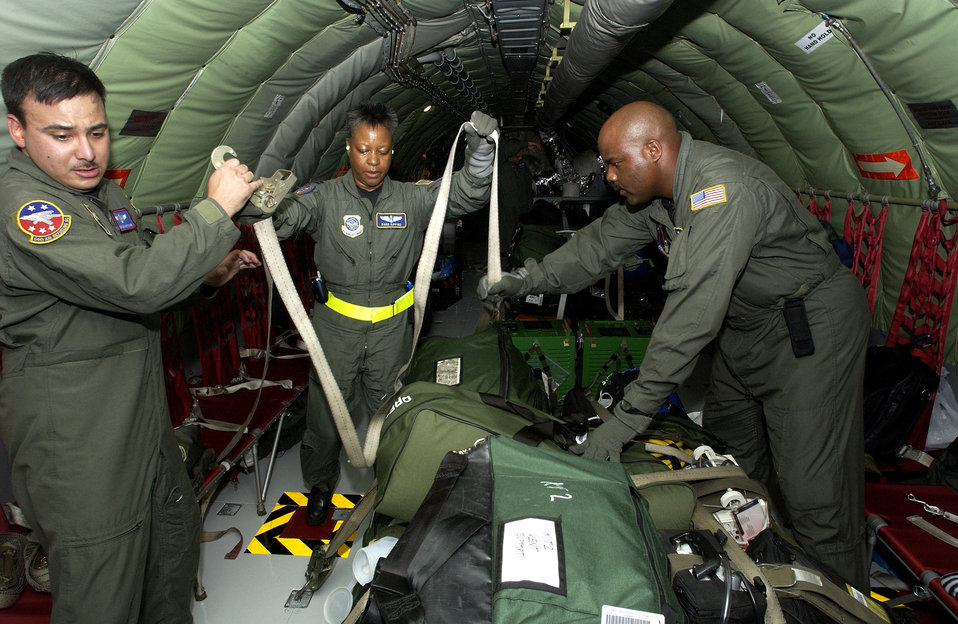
Cargo tie-down

SCOTT AIR FORCE BASE, Ill. - From left to right Staff Sgt. Ralph Hoffmann helps Capt. Barbara Kippins and Tech. Sgt. Todd Hughes secure cargo on a KC-135 Stratotanker before departing to San Antonio Sept. 24, while assisting with Hurricane Rita humanitarian operations. Sergeant Hoffman is from the 54th Air Refueling Squadron at Altus Air Force Base, Okla., and Capt. Kippins and Sergeant Hughes are from the 375th Aeromedical Evacuation Squadron here.